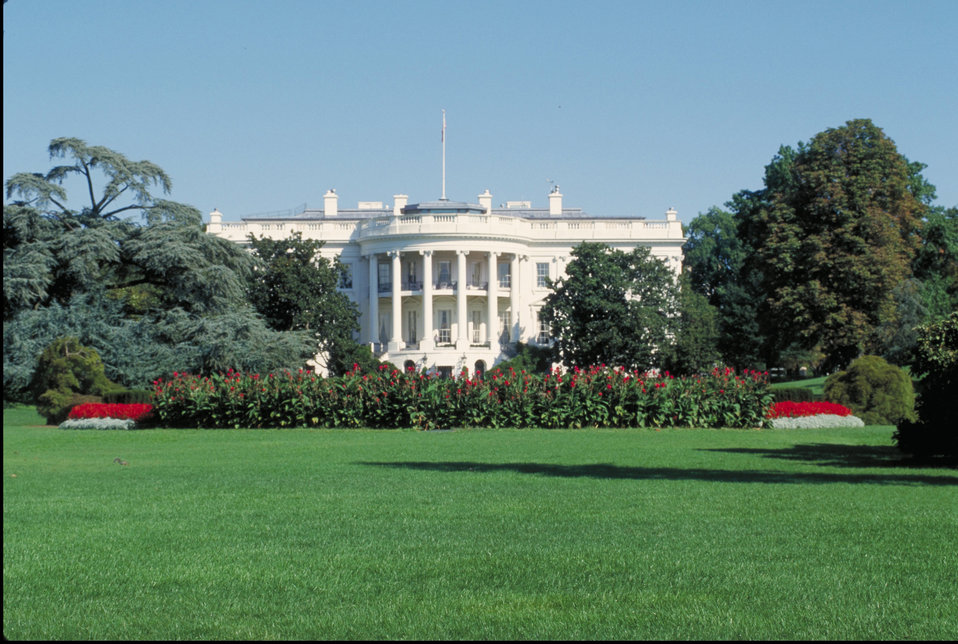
The White House in Washington, DC.